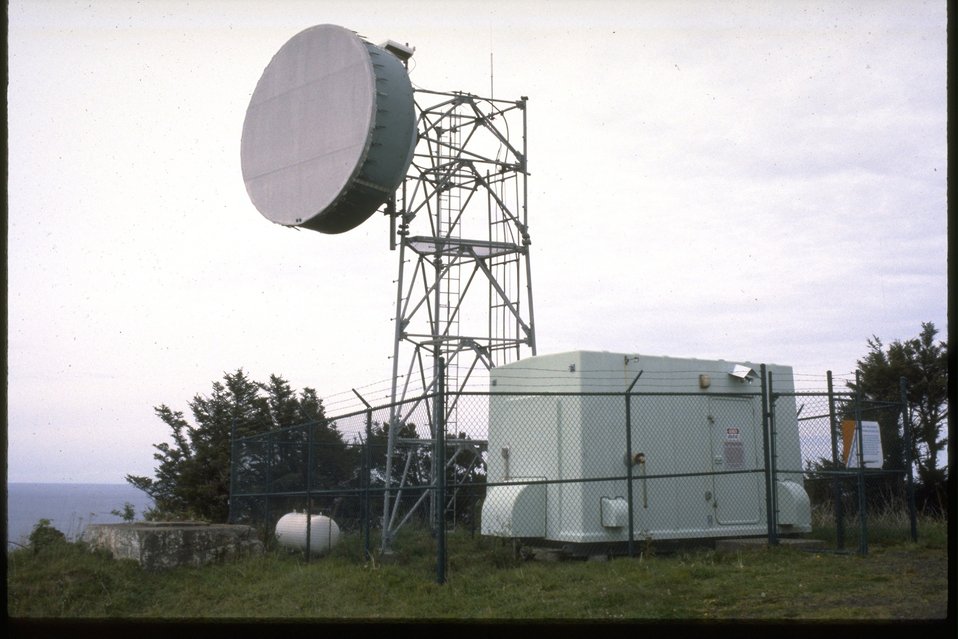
Communications site on Communication Hill.